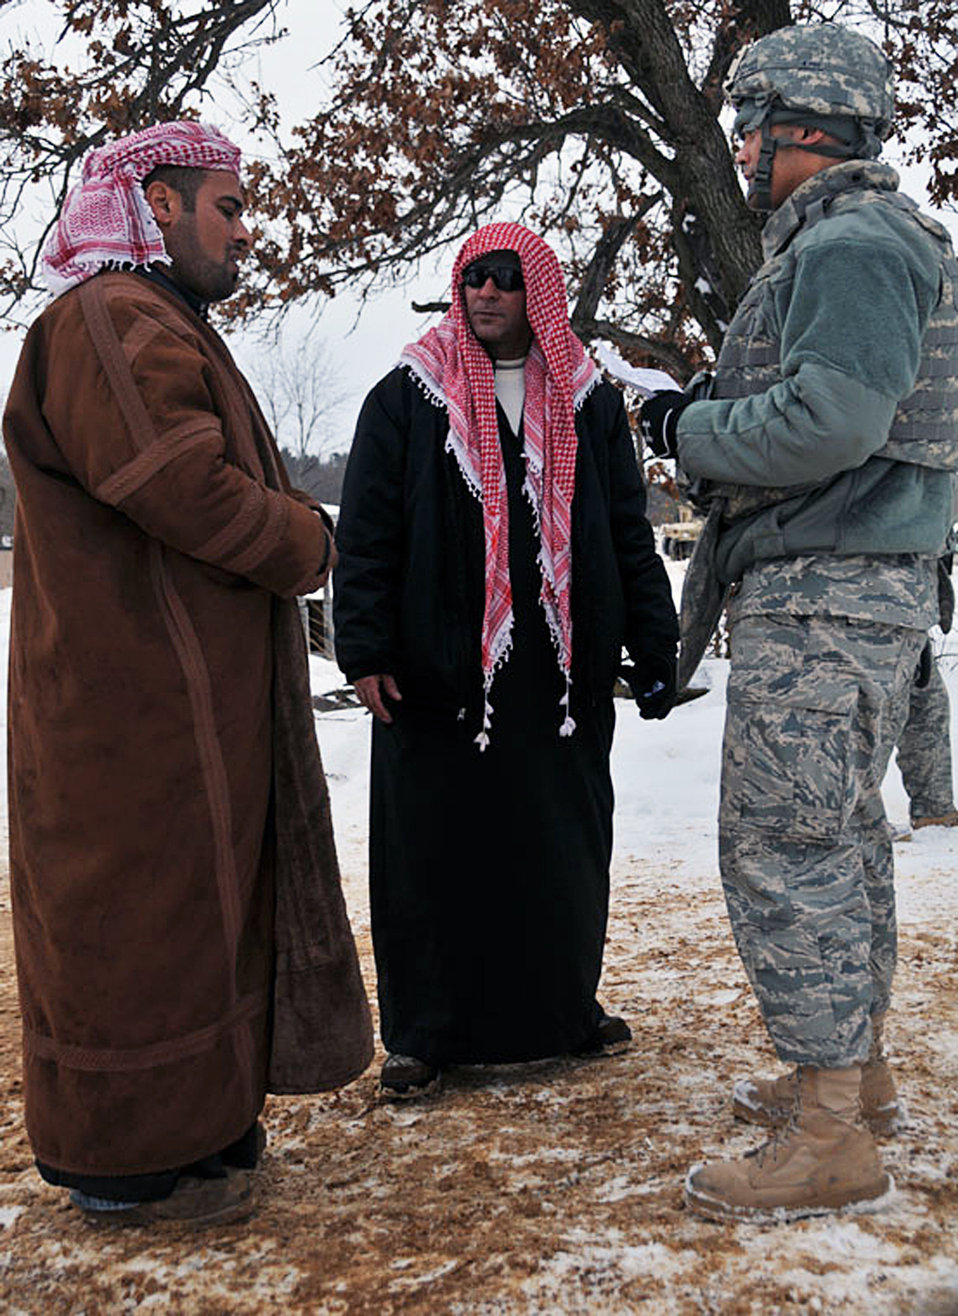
Engineer helps squadron

Engineers train at Fort McCoy, Wis., for their recent deployment to Afghanistan. The engineers are assigned to the 452nd Civil Engineer Squadron at March Air Reserve Base, Calif., and the 934th Civil Engineer Squadron at Minneapolis-St. Paul Air Reserve Station, Minn.